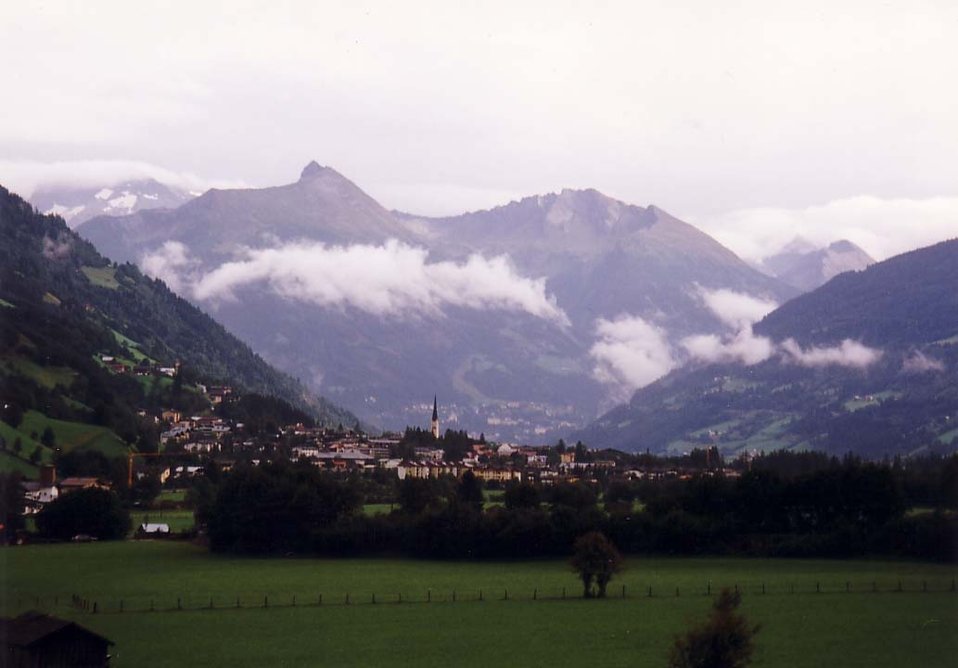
Deutsch: Bad Hofgastein